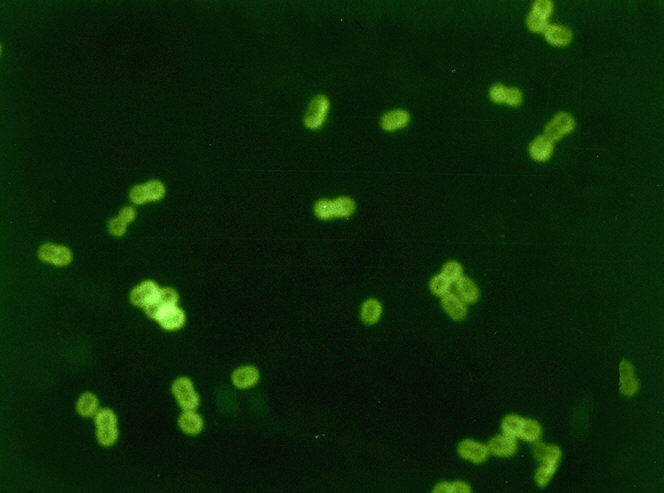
Streptococcus pneumoniae in spinal fluid. FA stain (digitally colorized).